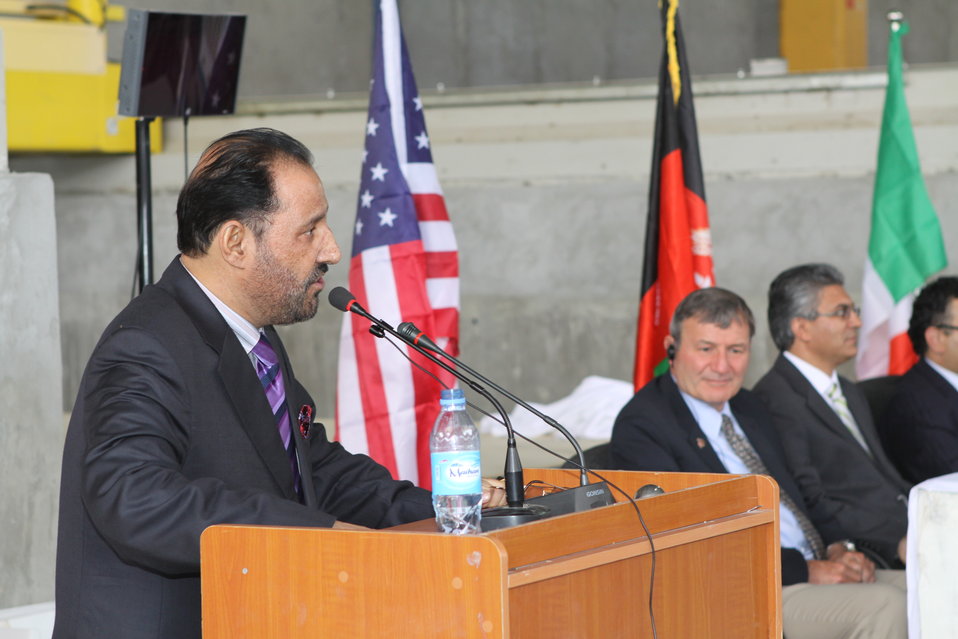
100525 Hirat Marble Conference 468